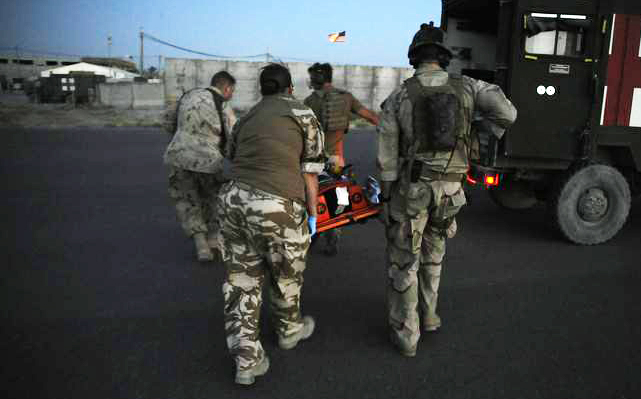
USAF rescue aids in 'Golden Hour' recovery of coalition forces.

Staff Sgt. William Lawson, right, a pararescuemen with the 129th Expeditionary Rescue Squadron helps carry a wounded Afghan National Army soldier to an ambulance at Kandahar Airfield, Afghanistan, June 27.